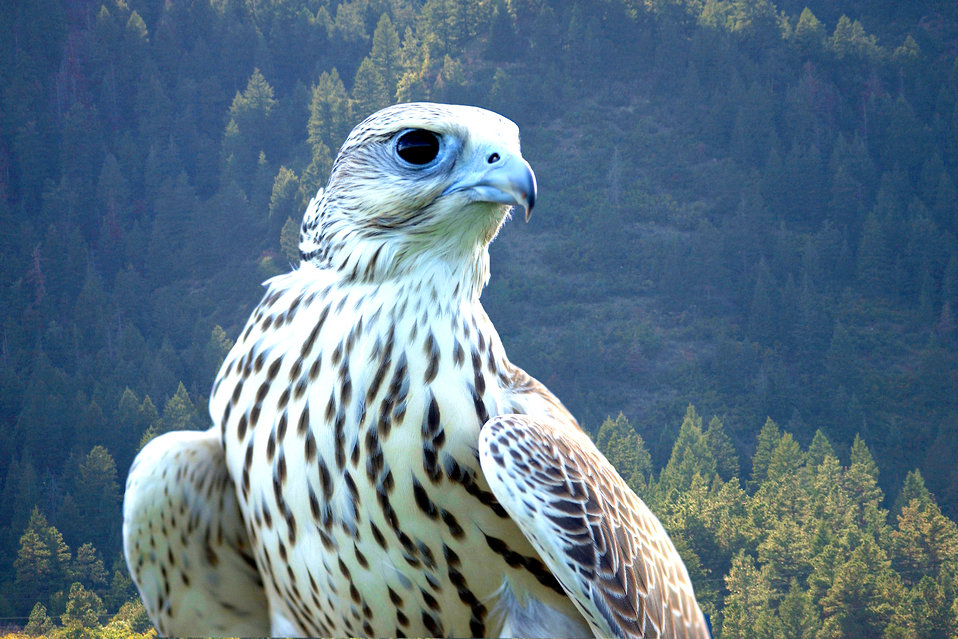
Academy mascot

U.S. AIR FORCE ACADEMY, Colo. -- The newest addition to the academy's falconry program, Yeti, looks for his trainer after being unhooded. This hybrid white gyrfalcon and saker falcon can exceed 200 mph in a dive. Yeti is training for performances and public appearances.